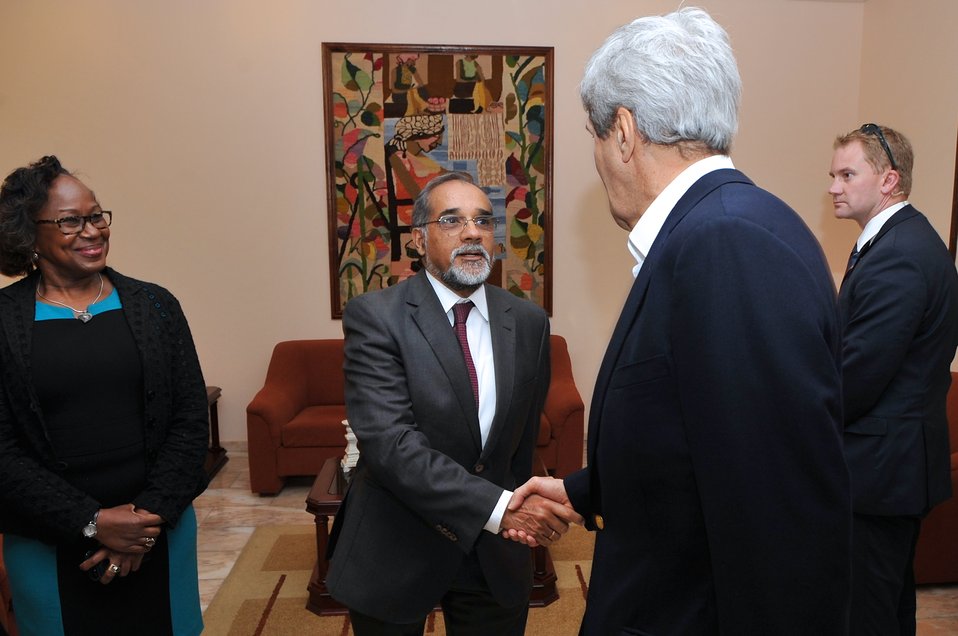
Secretary Kerry Meets Foreign Minister Borges of Cape Verde During Refueling Stop on Sal Island

U.S. Secretary of State John Kerry shakes hands with Foreign Minister Jorge Alberto Da Silva Borges of Cape Verde during an impromptu meeting while the Secretary's airplane refueled on Sal Island on May 5, 2014.